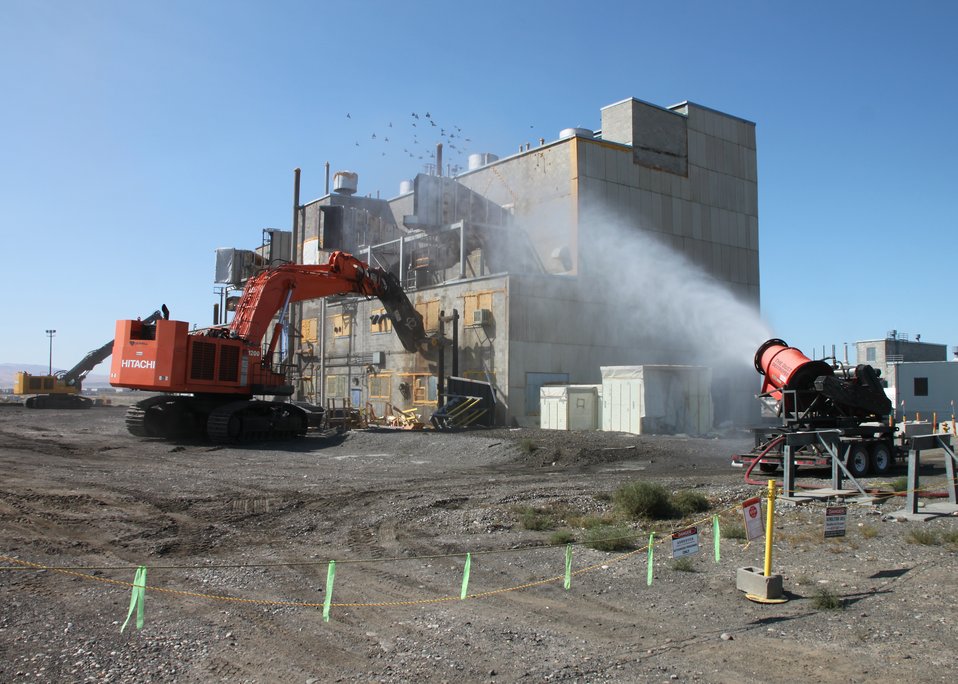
Richland 284-W Power House Demolition

Workers used explosives to demolish the 284-W Power House’s exhaust stacks, bag houses and water tower in February 2011 and finished demolition of the main building in September.